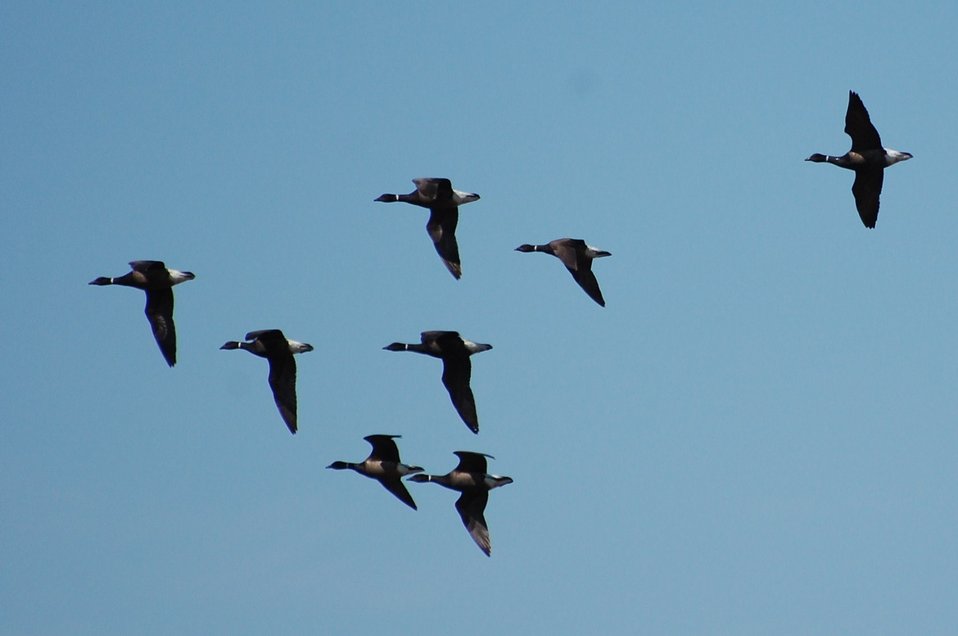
Brant, Izembek Lagoon, Izembek National Wildlife Refuge
Photo by Kristine Sowl, USFWS, Public domain